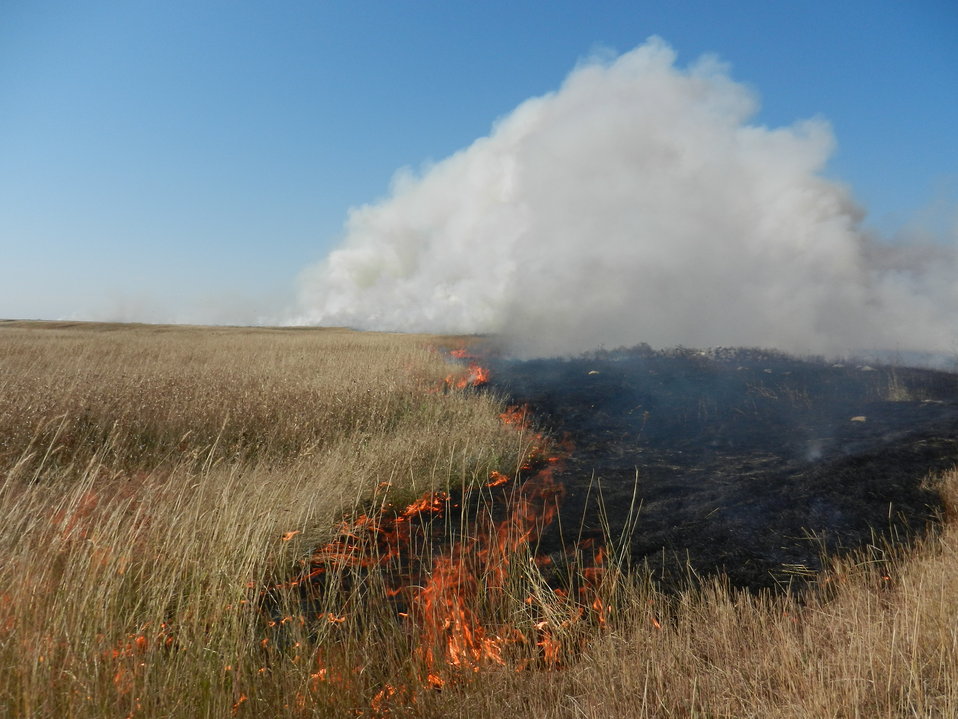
Fall Prescribed Burning on Des Lacs Refuge

All fire management actions on FWS lands are the result of fire management plans, which are required for all land management units with burnable acres, including national wildlife refuges, waterfowl protection areas, national fish hatcheries, conservation easements, and other lands. There are currently more than 630 units in FWS that require fire management plans.